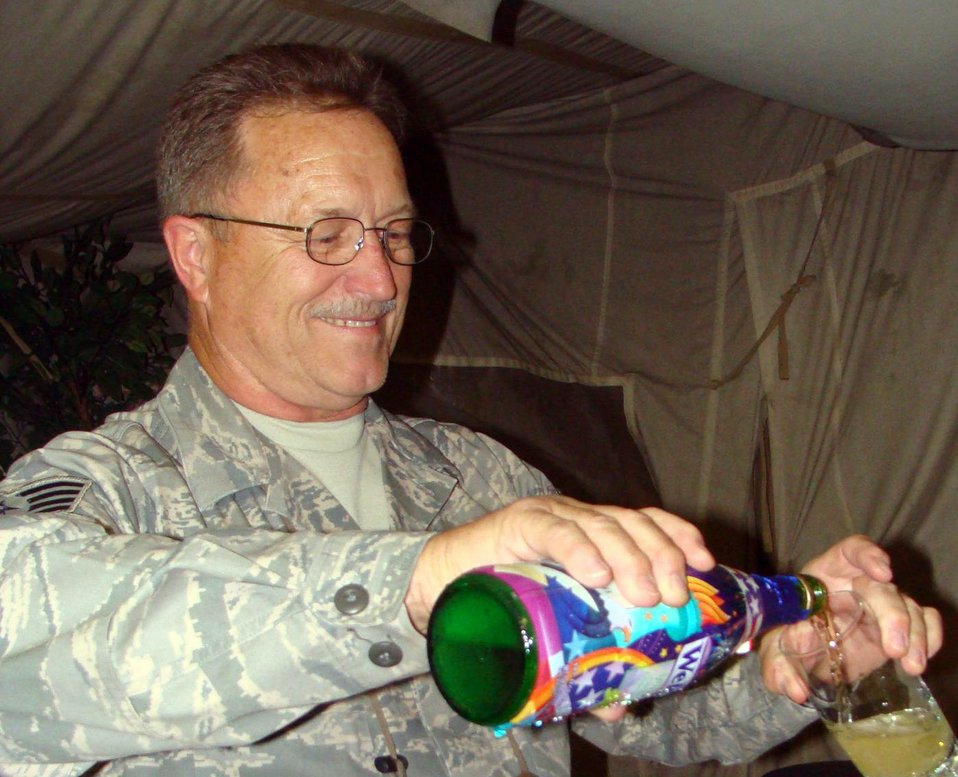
Manas Airman marries bride 16,000 away

Staff Sgt. Albert Jensen is all smiles as he pours sparkling white grape juice following his marriage Aug. 8 to long-time sweetheart, Charlene Kehaualani Meyer, who is in Hawaii. The couple married through a double-proxy ceremony which spanned 16 time zones and 16,000 miles with the bride in Hawaii, chaplain in Montana, and groom in the Kyrgyz Republic.